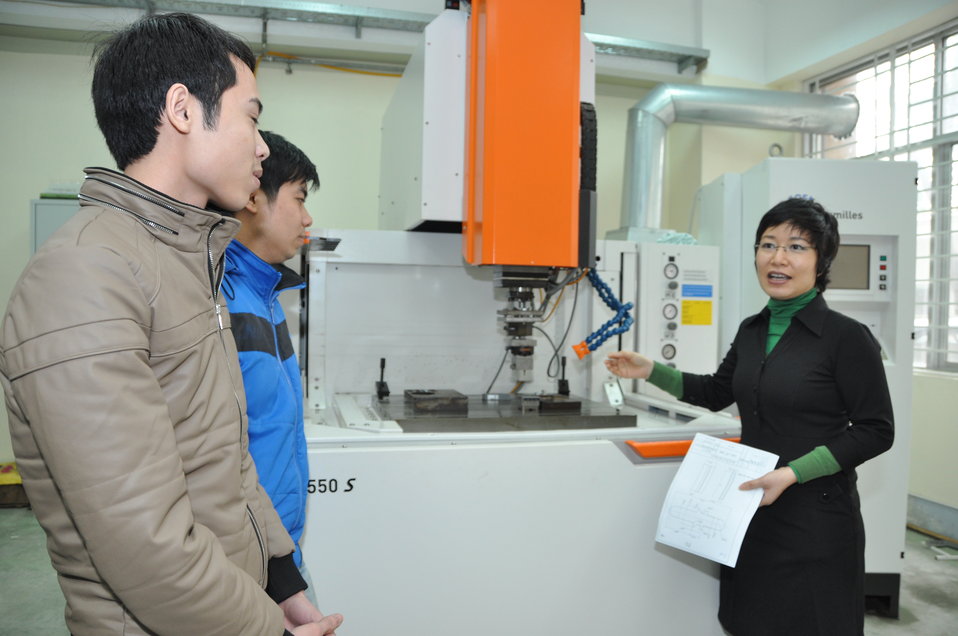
HEEAP faculty participant Dr.Nguyen Thi Hong Minh at the Hanoi University of Science and Technology (HUST)

Visit with Dr. Ir. Nguyen thi Hong Minh, Vice Dean, Internaitonal and Students Affairs, School of Mechnical Engineering -- Material Cutting and Industrial Instrument Department